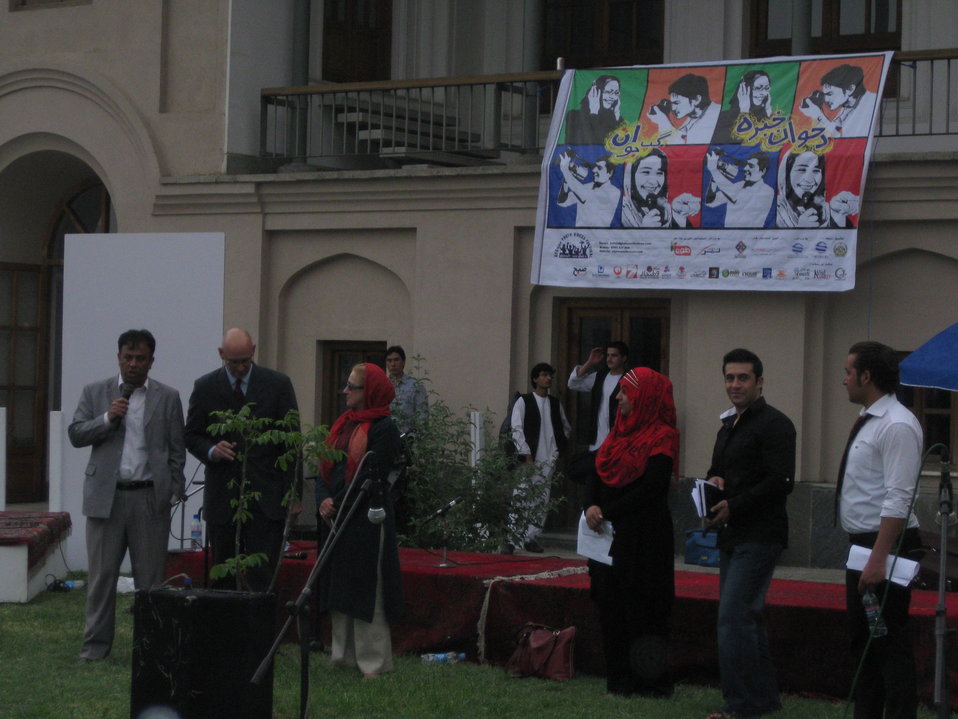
Afghan Youth Voices 117